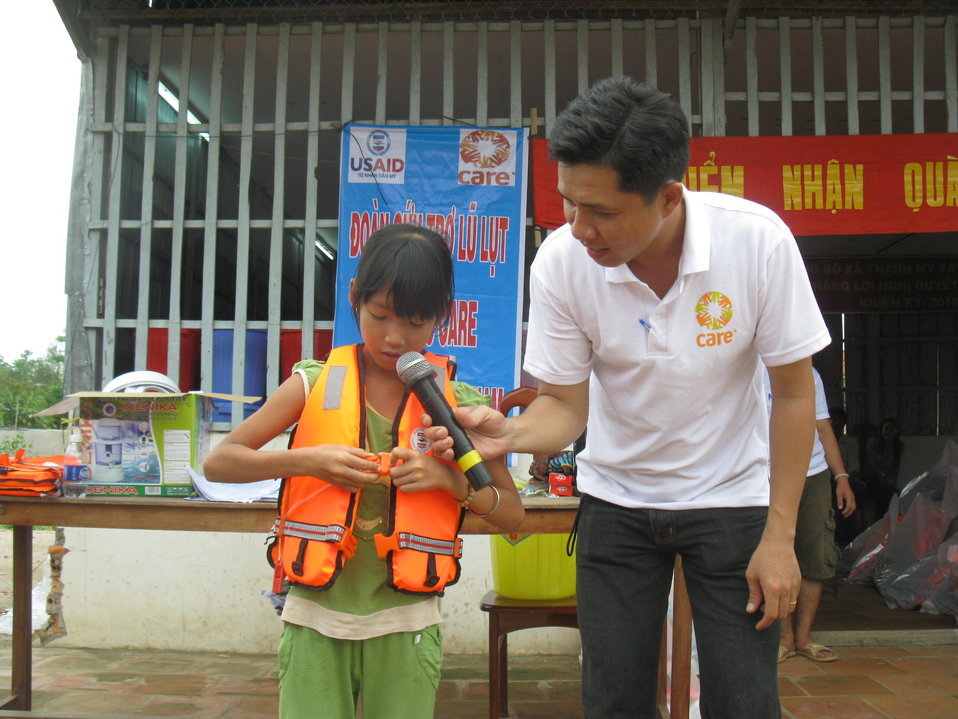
USAID Relief distribution in Giang An Province

November 8, 2011